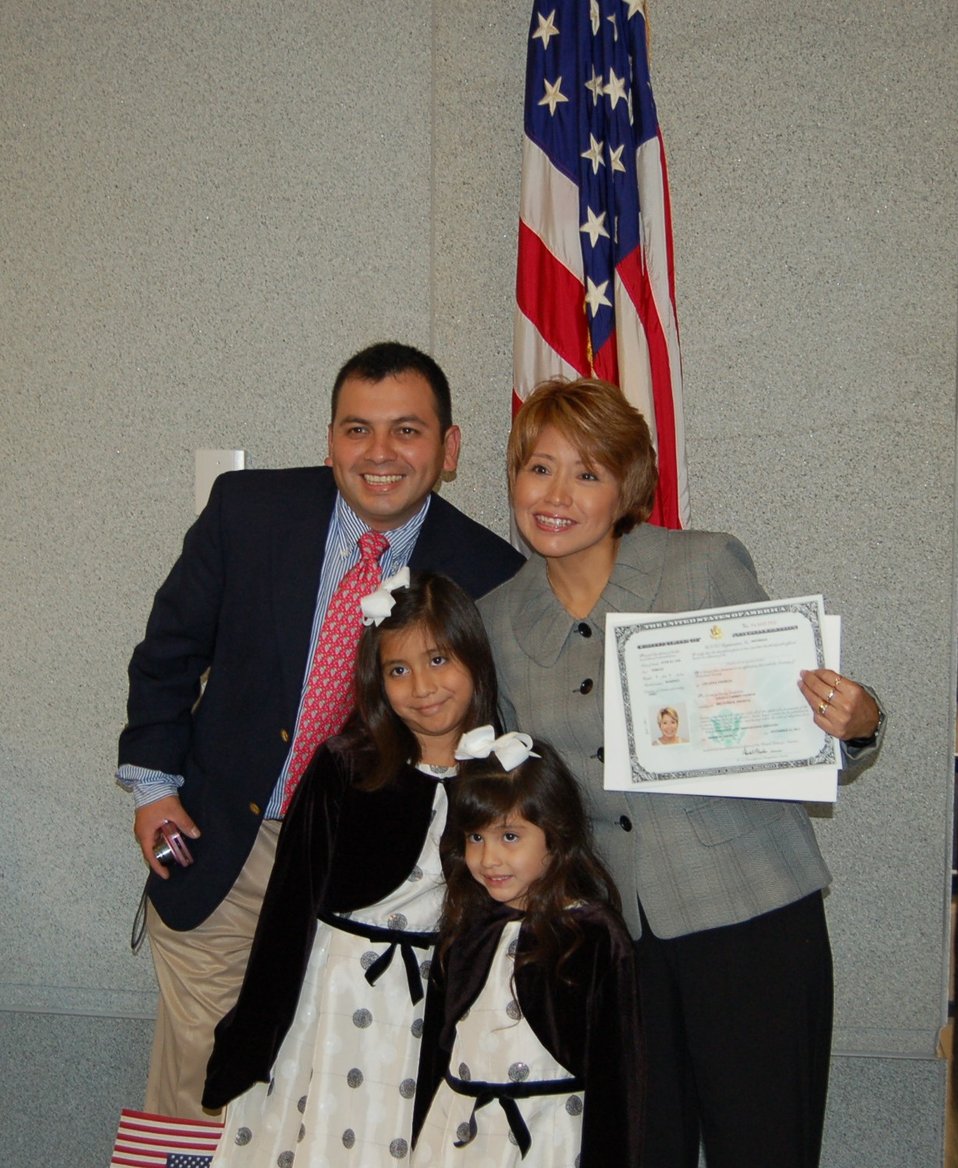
New Citizens